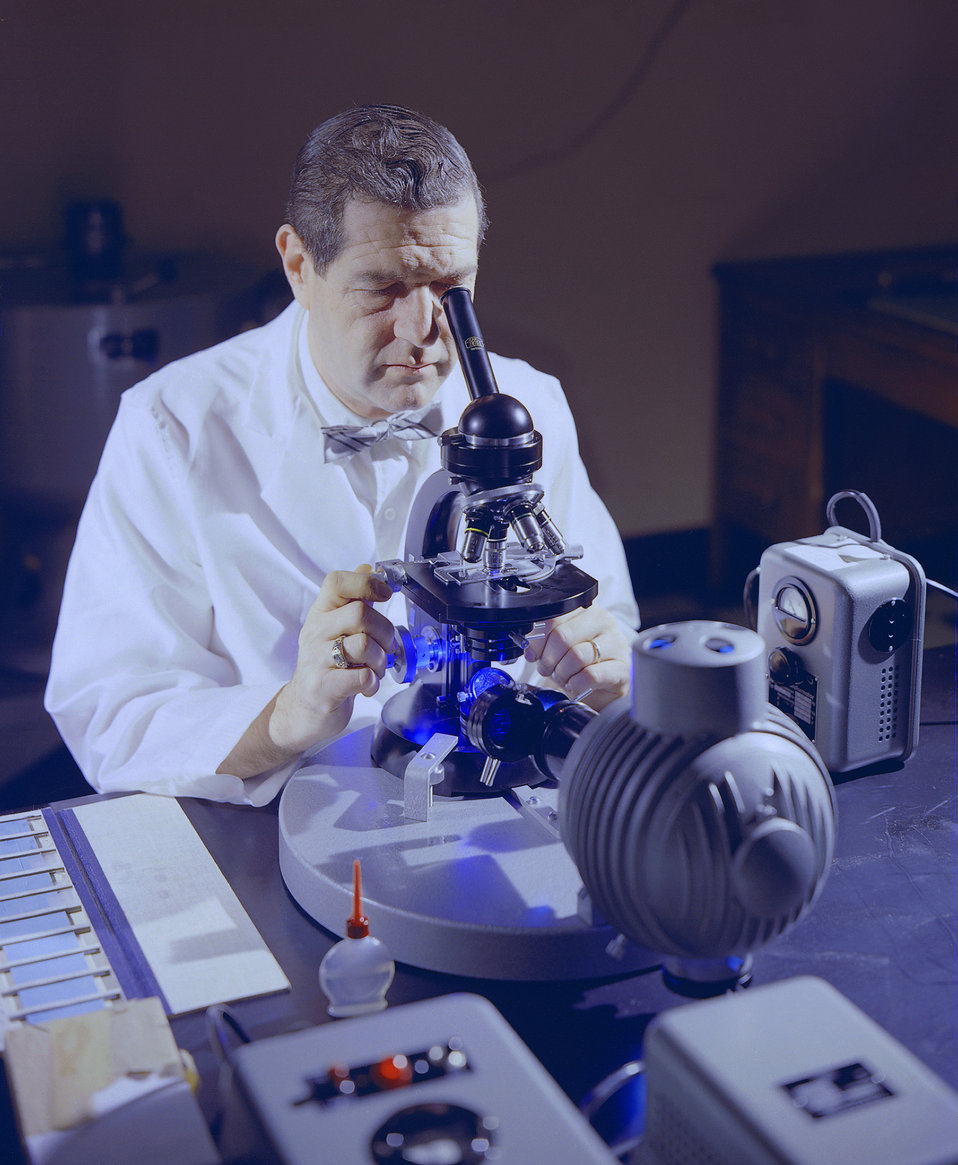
This historic image dated 1963, depicted bacteriologist Dr. Joseph Z. Biegeleisen, seated at his fluorescent microscope in his laboratory.